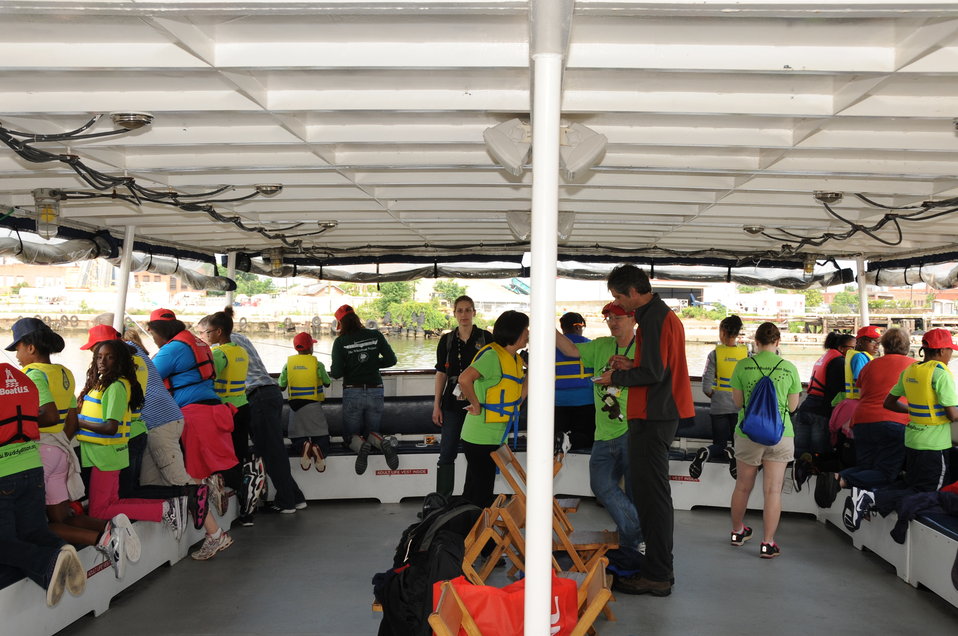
2013 National Fishing and Boating Week

Local students prepare to enjoy fishing at the annual kick-off of National Fishing and Boating Week on the Anacostia River in Washington D.C.